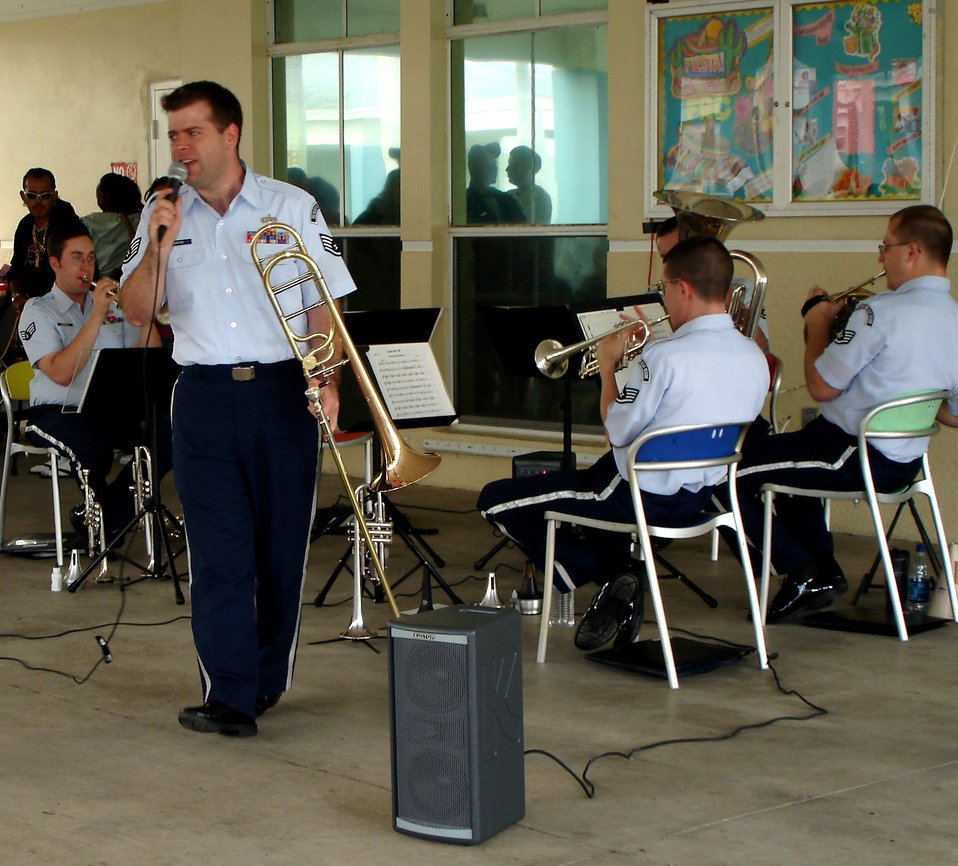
Air Force Reserve Band spreads goodwill

Staff Sgt. John Caputo belts out a James Brown tune during a concert at Community Partnership for Homeless in Homestead, Fla. The band played a total of nine performances during a three day period in Miami-Dade County focused on thanking the community for their continued support of the Air Force Reserve. Sergeant Caputo is a trombone player with the Band of the Air Force Reserve from Robins Air Force Base, Ga.